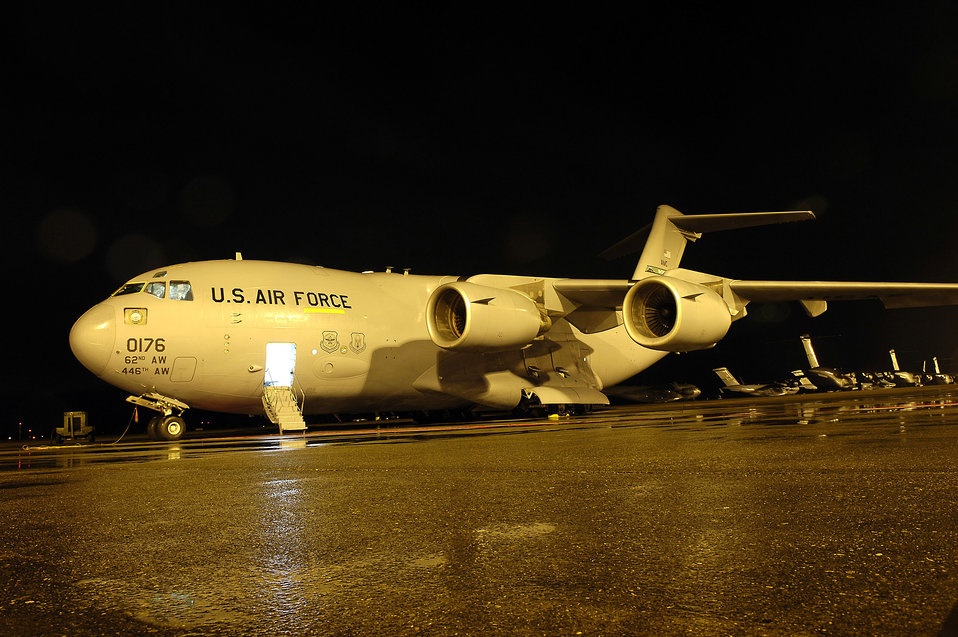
June 18 airpower summary

The C-17 Globemaster III is capable of rapid strategic delivery of troops and all types of cargo to main operating bases or directly to forward bases in the deployment area. The aircraft can perform tactical airlift and airdrop missions and can also transport litters and ambulatory patients during aeromedical evacuations when required.